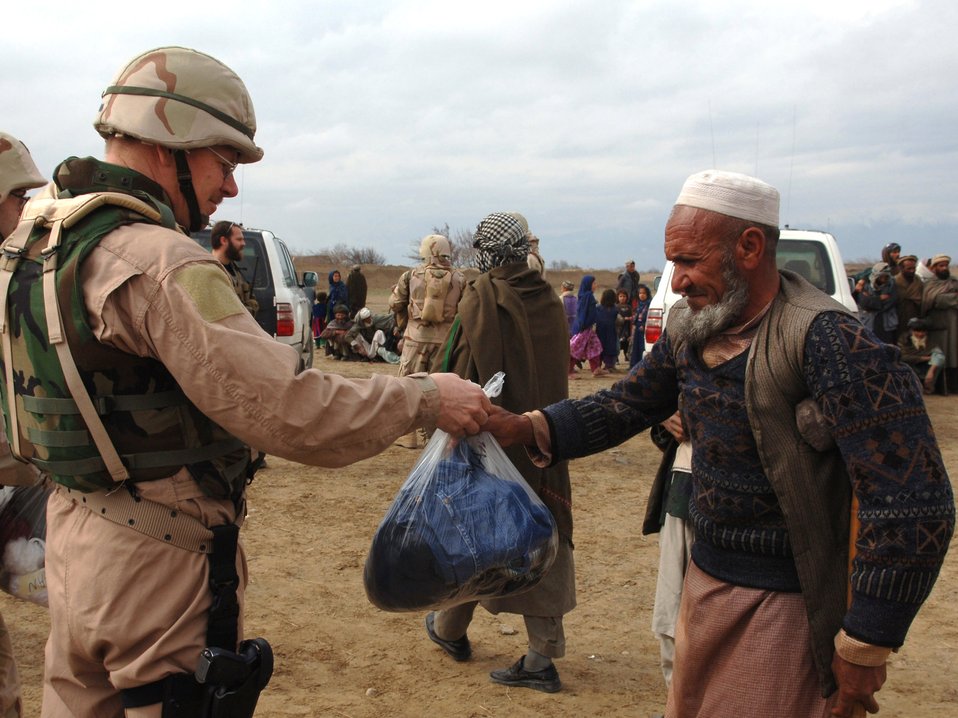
Airmen reach out

Tech. Sgt. John Strothenke hands a village elder a bag of clothing during a recent Adopt-A-Village visit to Gadia, Afghanistan. Sergeant Strothenke is an independent duty medical technician assigned to the 455th Expeditionary Fighter Squadron at Bagram Air Base, Afghanistan. He is deployed from Eielson Air Force Base, Alaska.